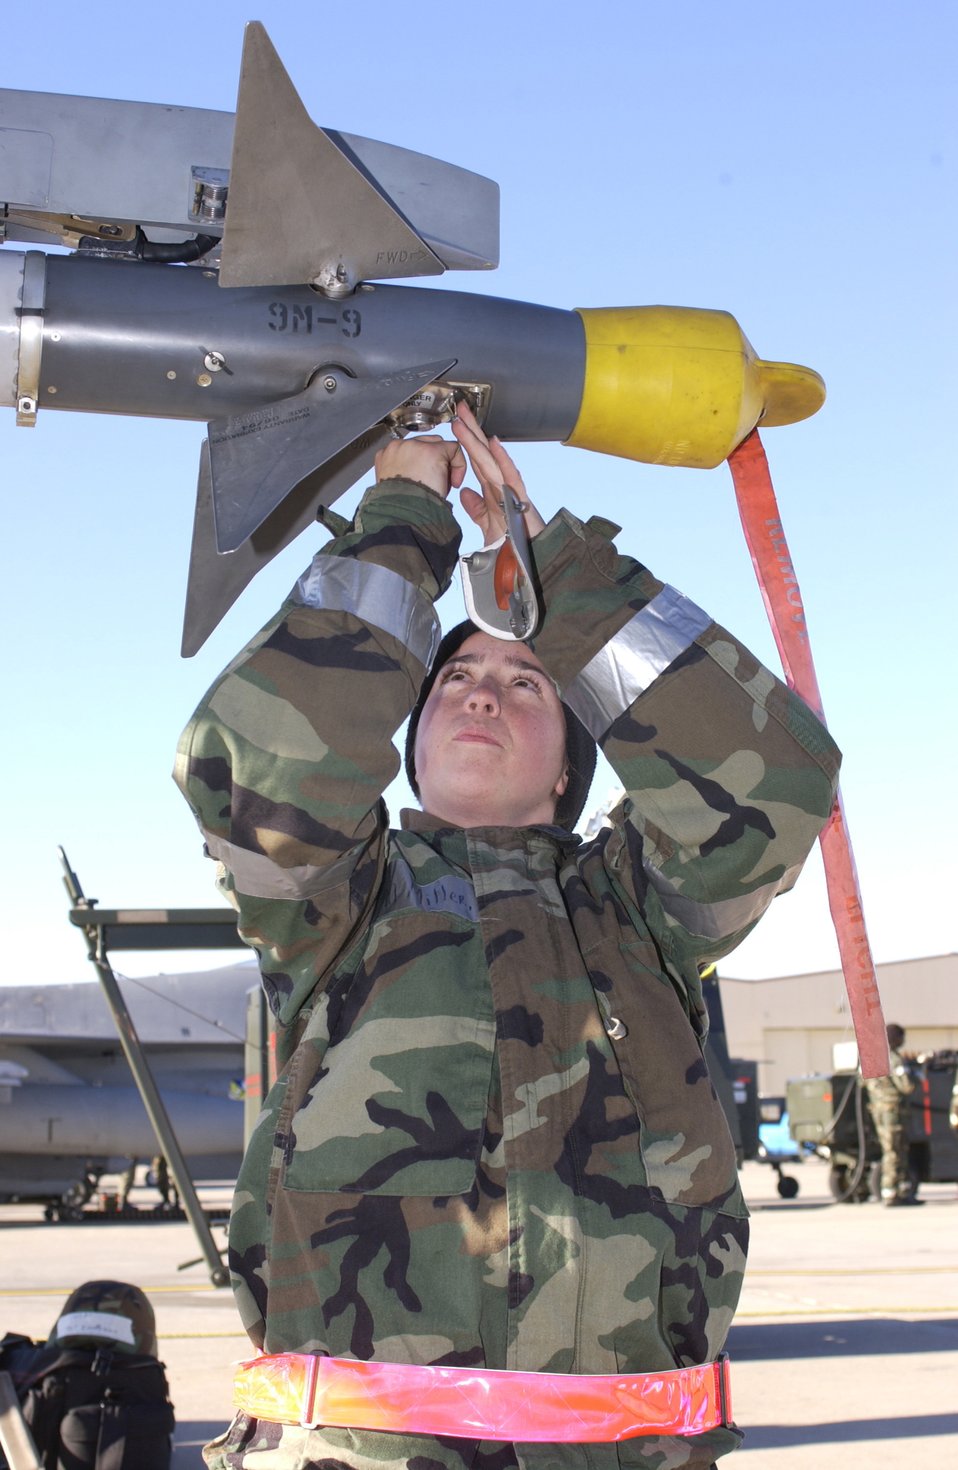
Coronet Roadrunner

CANNON AIR FORCE BASE, N.M. -- Airman Dominique Miller changes the Argon bottle on an AIM-9 missile during an exercise here Dec. 2. Airman Miller is assigned to the 27th Aircraft Maintenance Squadron.